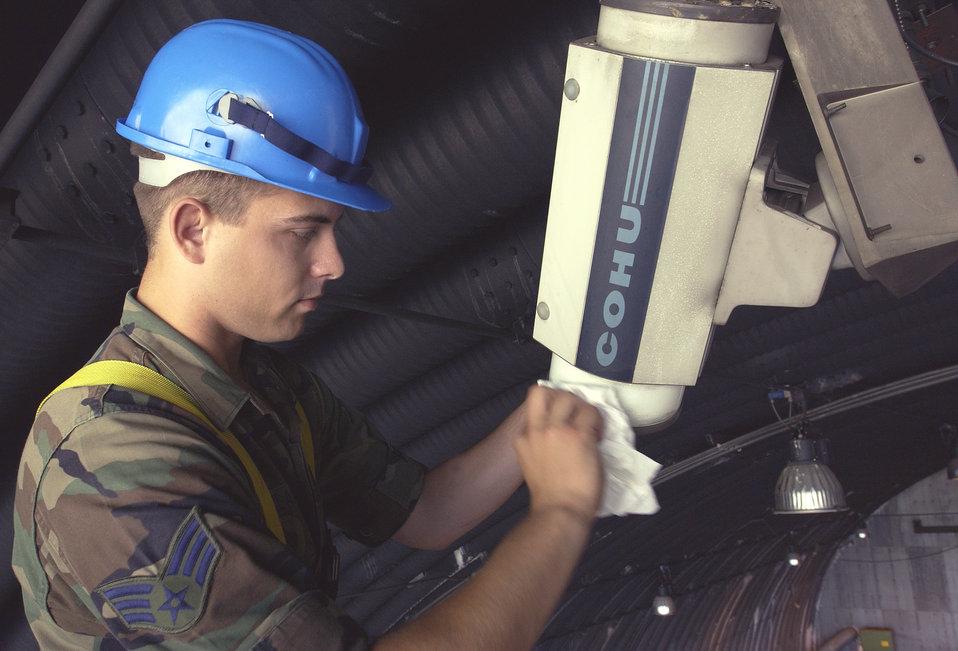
Monthly checkup

AVIANO AIR BASE, Italy -- Senior Airman Anthony McClain checks a security visual monitor during a periodic maintenance inspection here Aug. 12. In addition to doing maintenance inspections, the Base Installation Security Systems shop is in charge of maintaining all of the security systems on base. Airman McClain is a member of the 31st Communications Squadron.